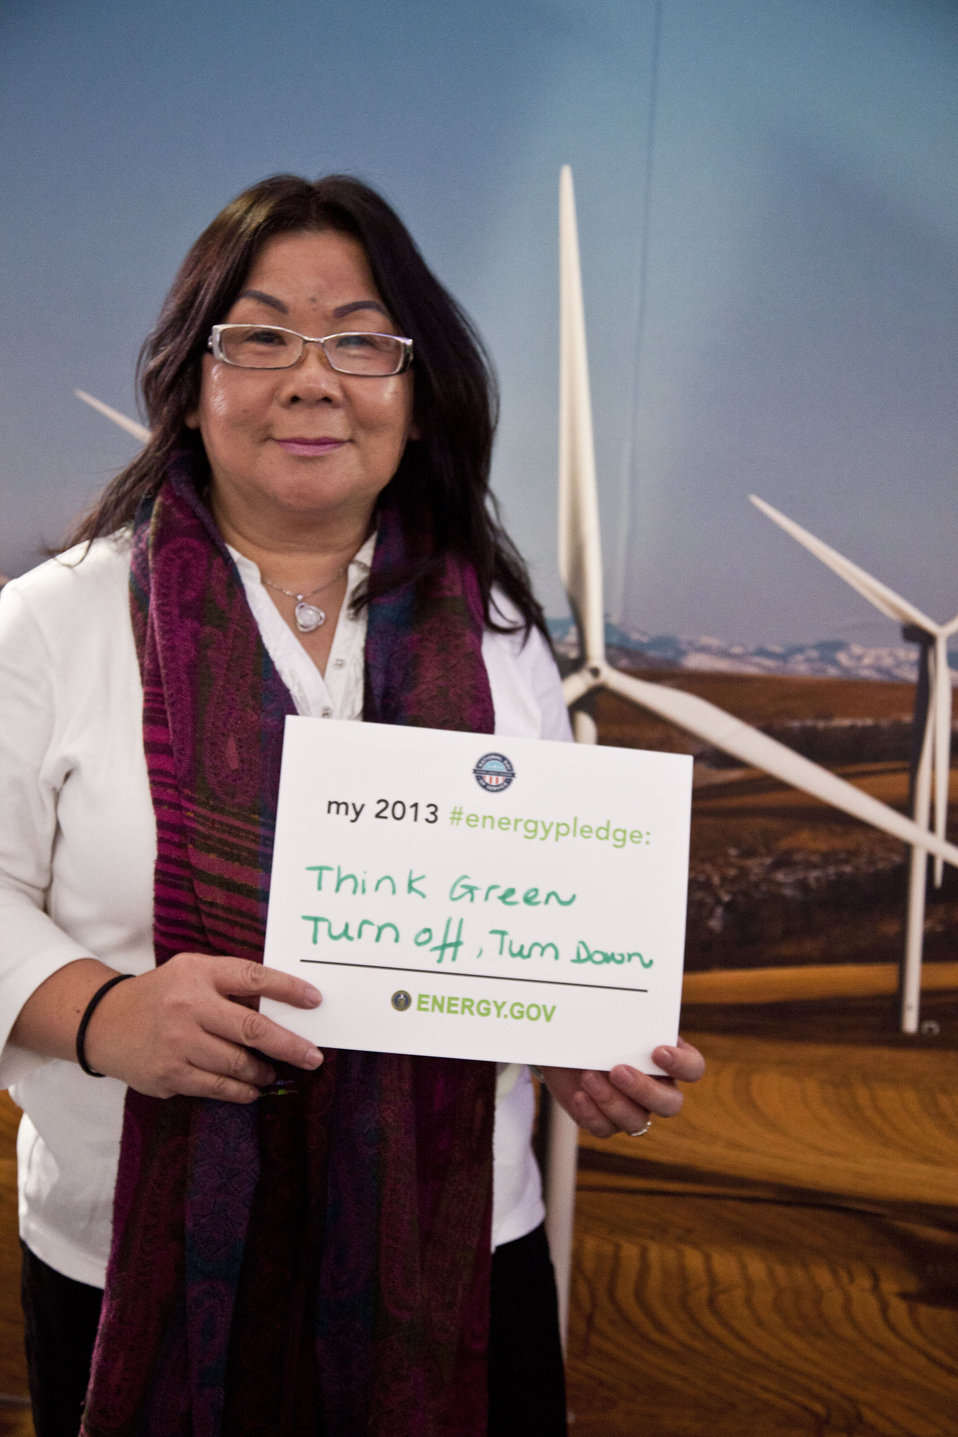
What's your #energypledge?